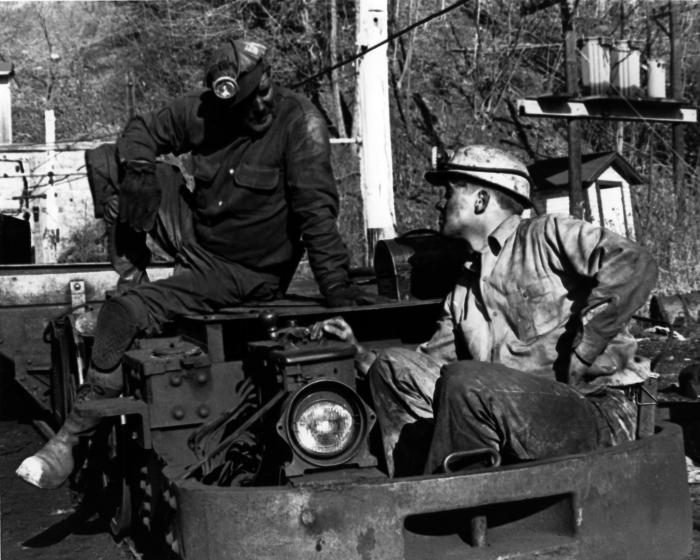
A closer view of PHIL 9550 showed these men wearing their headlamps outside the confines of a coal mine. Both were seated on a rail pull-car used to pull a string of coal bins, which would carry raw ore up, and out of the subterranean mine shafts. The man at right appeared to be an industrial hygienist, for he was carrying what appeared to be an air-quality measuring device (see PHIL 9550). The miner at left, was wearing protective knee pads, which he'd need when maneauvering around in a crouched position in the small spaces inside the mine shaft. The coal dust pattern on their faces showed that they hadn't been wearing protective breathing masks. Airborne coal dust in the small confines of a mine, made miners predisposed to the long-term negative health effects of this profession such as 'black lung disease', or 'coal-workers' pneumoconiosis' (CWP). This image was provided by the Center for Disease Control's (CDC), National Institute for Occupational Safety and Health (NIOSH).